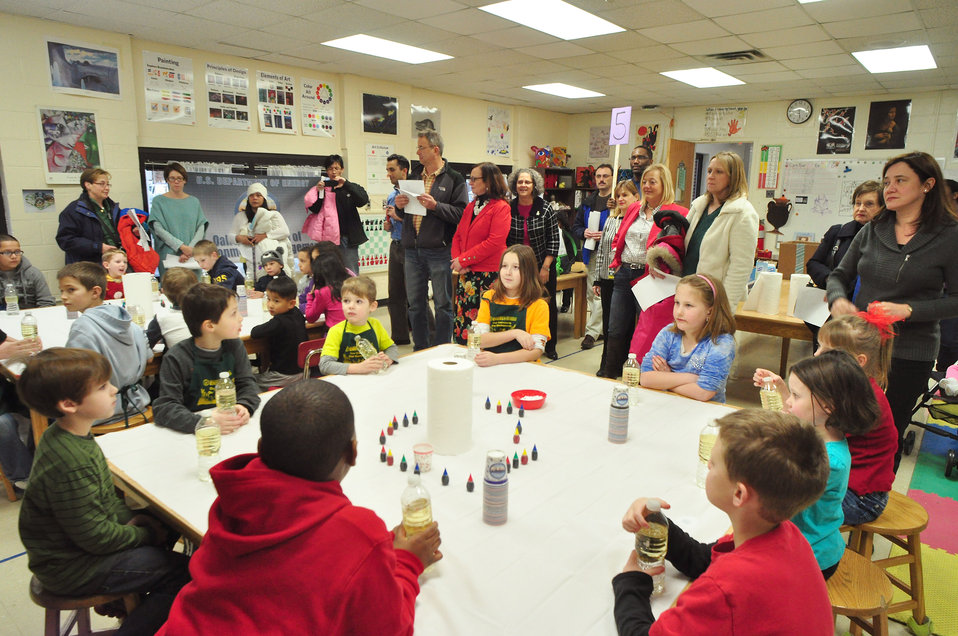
Woodland School STEM Night Oak Ridge 2014

14-013 DOE photo Lynn Freeny 1-23-2014 Oak Ridge Tennessee